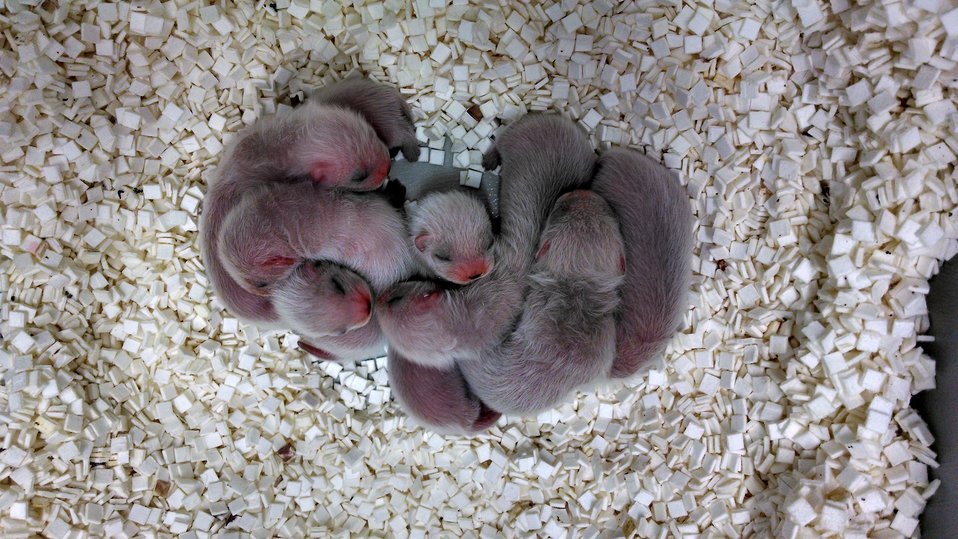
Newborn Black-footed Ferrets

These kits were just one-week-old at the time of this photo (Mid-May, 2014).